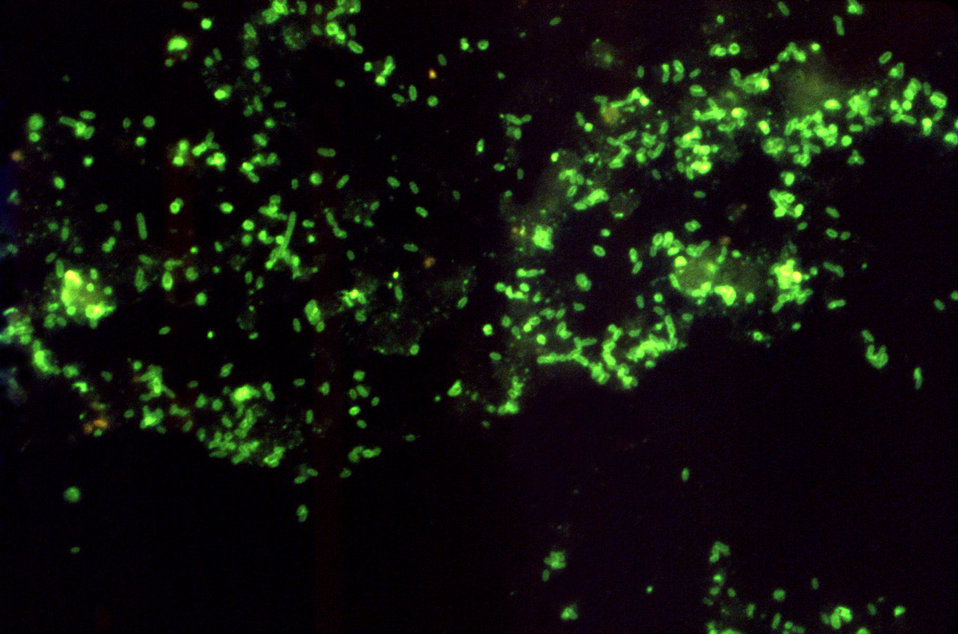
This micrograph depicted details displayed by a specimen consisting of scrapings of formalin fixed lung tissue from a Knoxville patient with a fatal pneumonia due to Legionnaires' disease. A fluorescent antibody stain was implemented consisting of a Legionnaire #1 conjugate at a dilution ration of 1:16. In this case, an antibody with an affinity to L. pneumophila bacteria, was conjugated with a fluorochrome, which is a fluorescent dye, e.g. fluorescein isothiocyanate. The presence of the Legionella bacteria was evidenced when the antibody-dye complex became bound to the bacterial cell wall, and fluoresced when exposed to light.